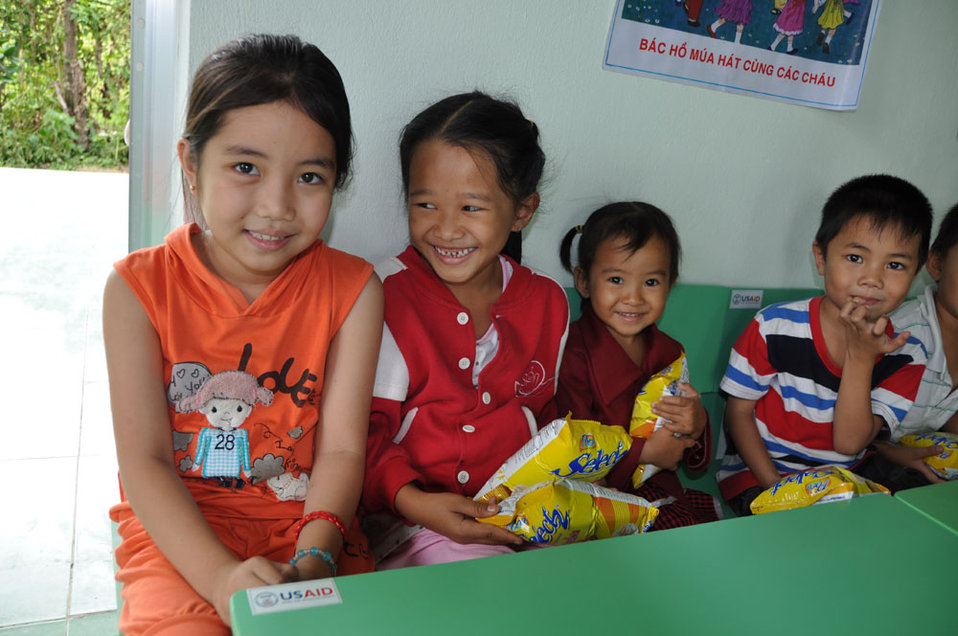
Children in Kon Tum, Vietnam, enjoy their new pre-schools refurbished with USAID funding